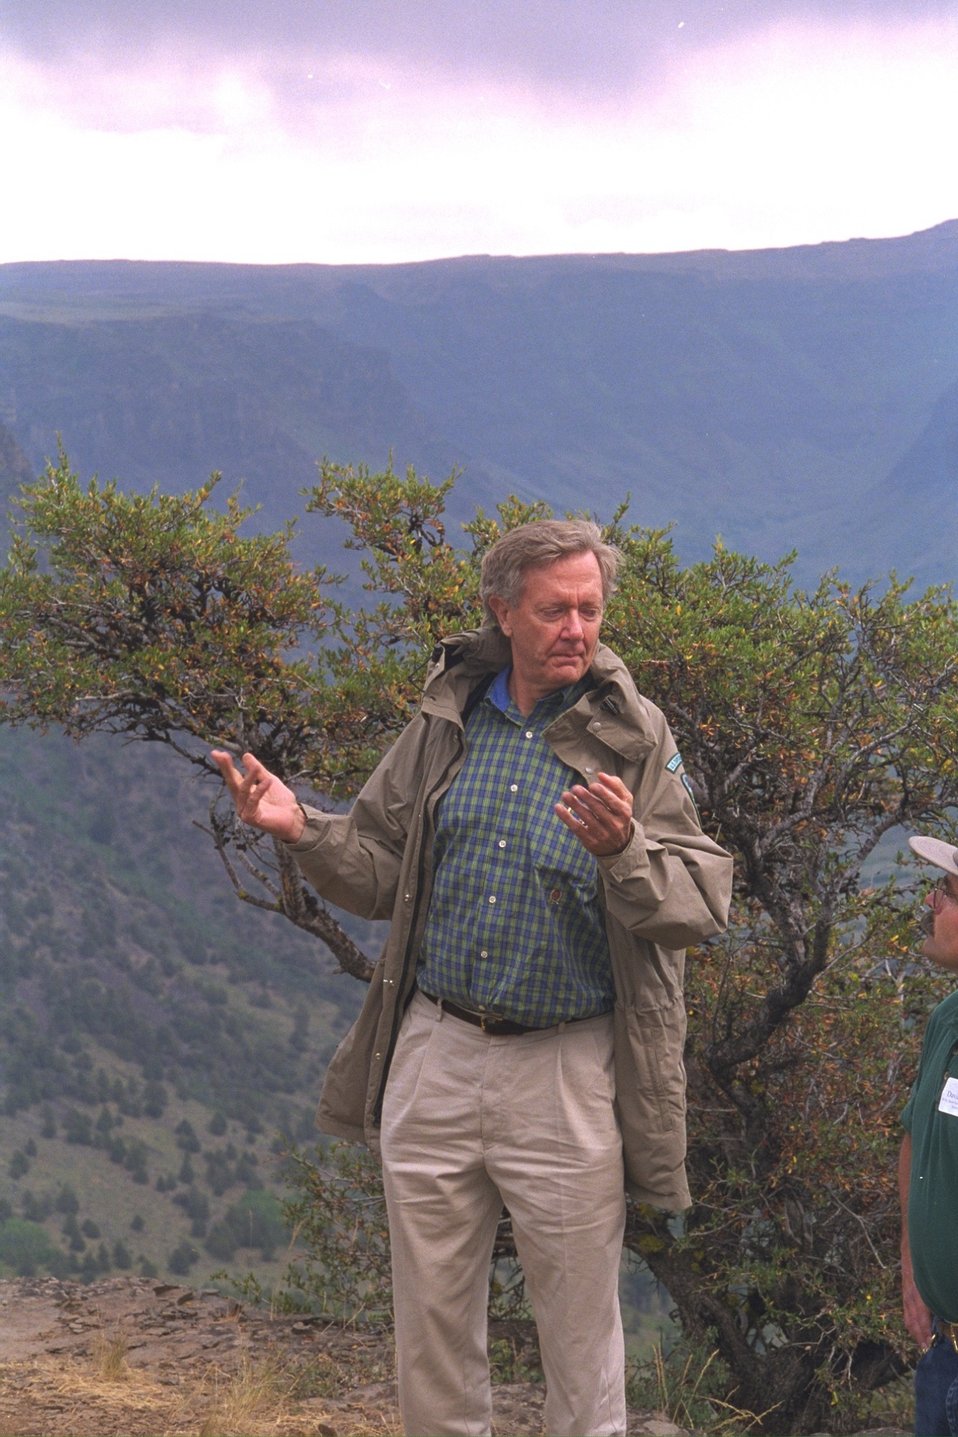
Secretary of the Interior, Bruce Babbitt, at Big Indian Gorge on Steens Mountain.